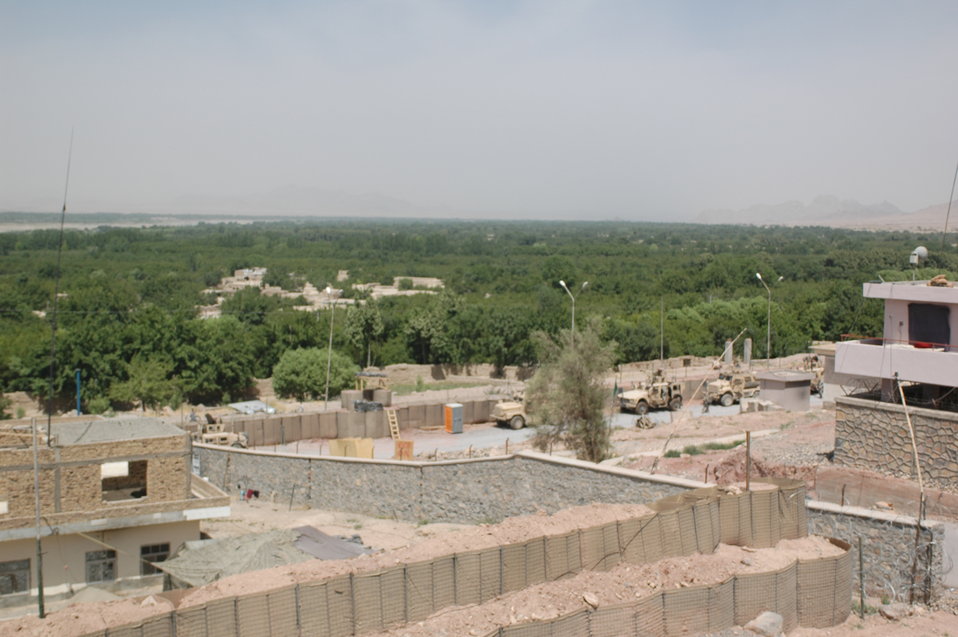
Dr Shah Visits Kandahar April 9, 2010